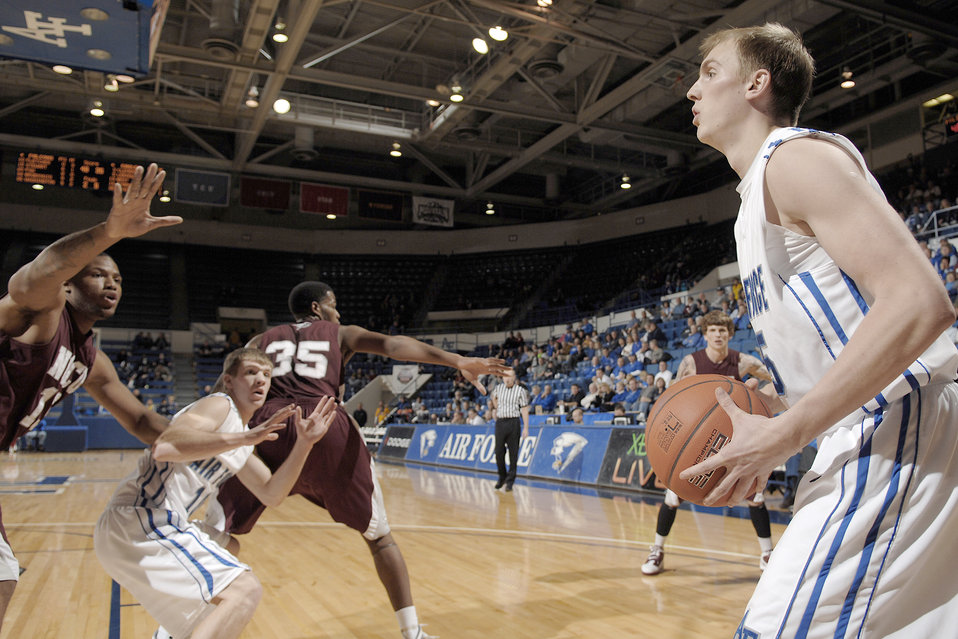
Falcons defeat the Eagles

Air Force Academy junior Taylor Stewart throws the ball in bounds as the Falcons defeat North Carolina Central 73-56, Dec 11, 2010, at Clune Arena in Colorado Springs, Colo.